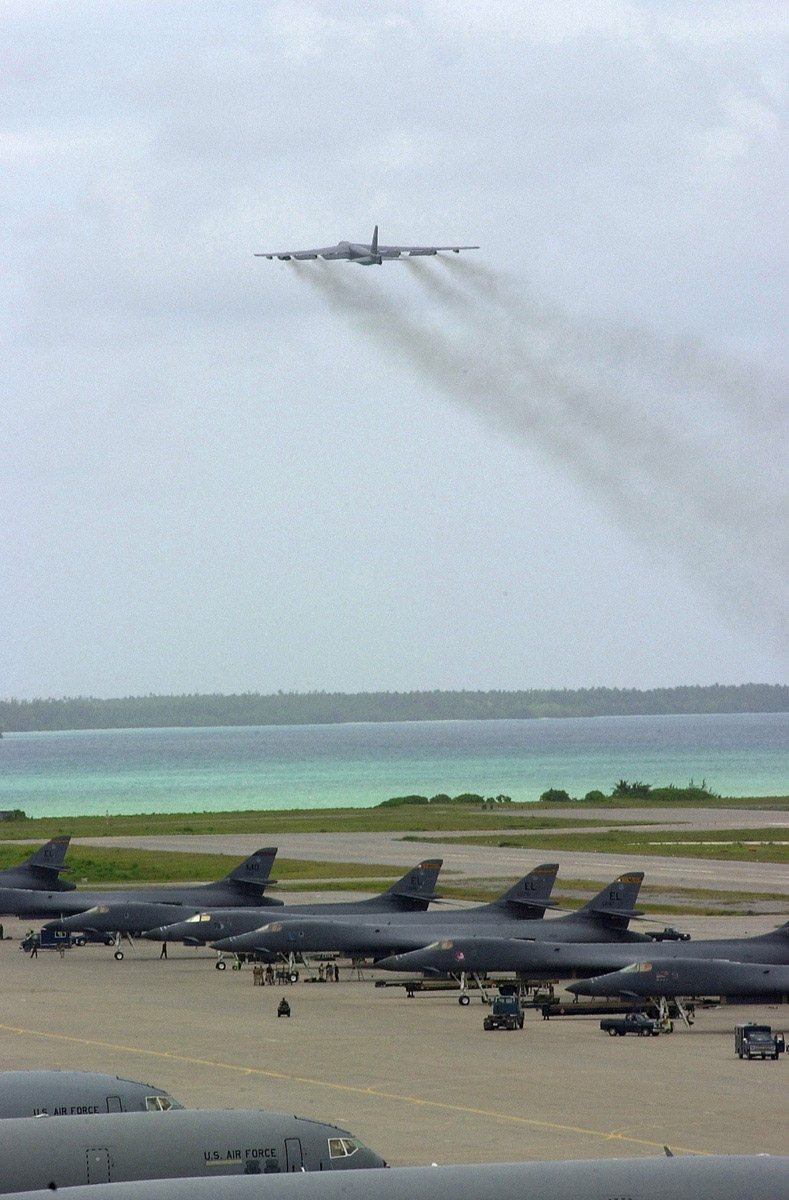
Bomber bunch

OPERATION ENDURING FREEDOM -- An Air Force B-52 bomber from the 28th Air Expeditionary Wing takes off from Diego Garcia for a combat mission Oct. 22, 2001, in support of Operation Enduring Freedom. Air Force B-2, B-1 and B-52 bombers have expended more than 80 percent of the tonnage dropped on combat missions over Afghanistan. The Air Force has flown more than 600 sorties including strike missions against al Qaeda and Taliban targets in Afghanistan. These targets include early-warning radars, ground forces, command-and-control facilities, al Qaeda infrastructure, airfields and aircraft.